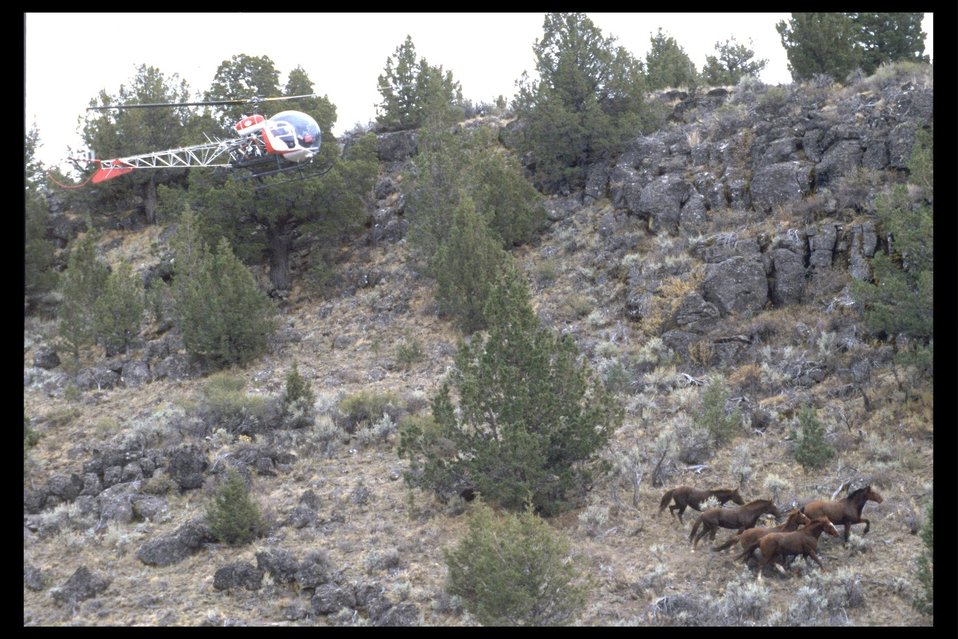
Helicopter driving South Steens wild horses into a trap.